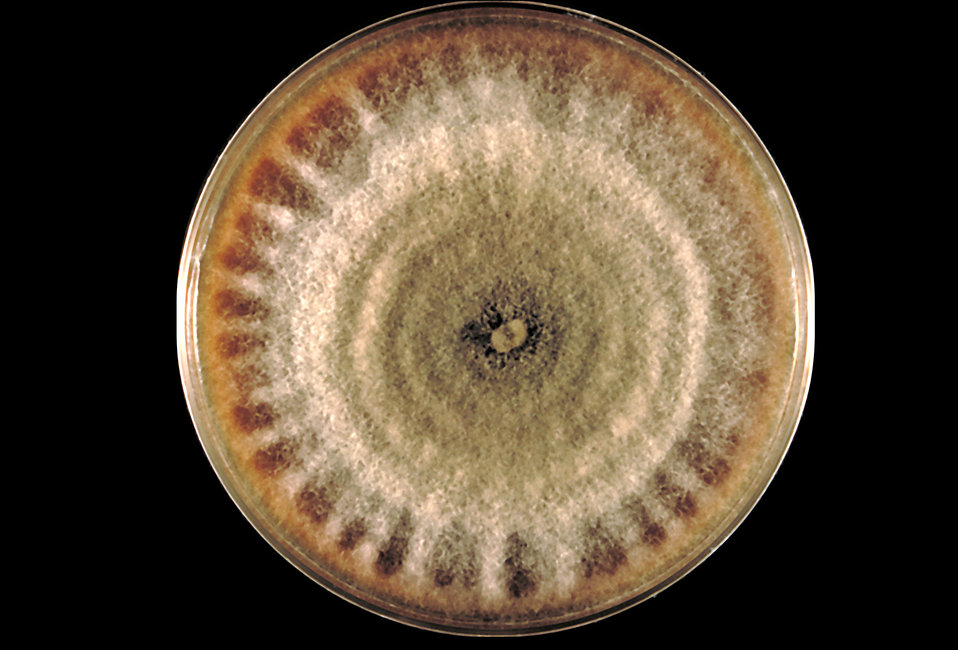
This image depicts a plate culture with a colony of the fungus Corynespora cassiicola.